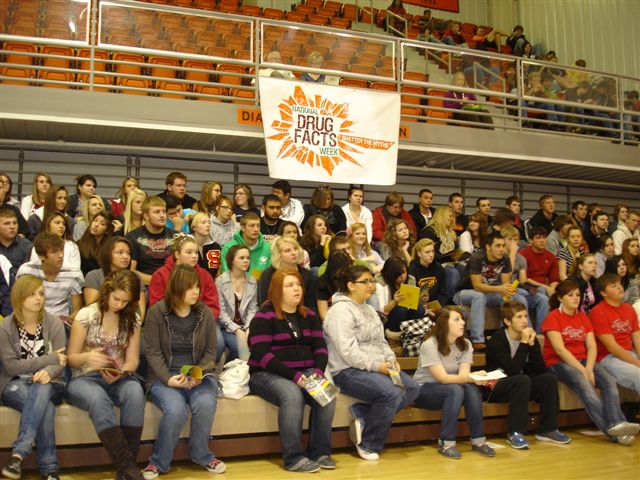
Sallisaw County Oklahoma Event

Teens in Sallisaw County Oklahoma listen to experts on drugs during National Drug Facts Week in an event planned by the Sallisaw Youth Coalition and the Community Anti-Drug Coalitions of America.